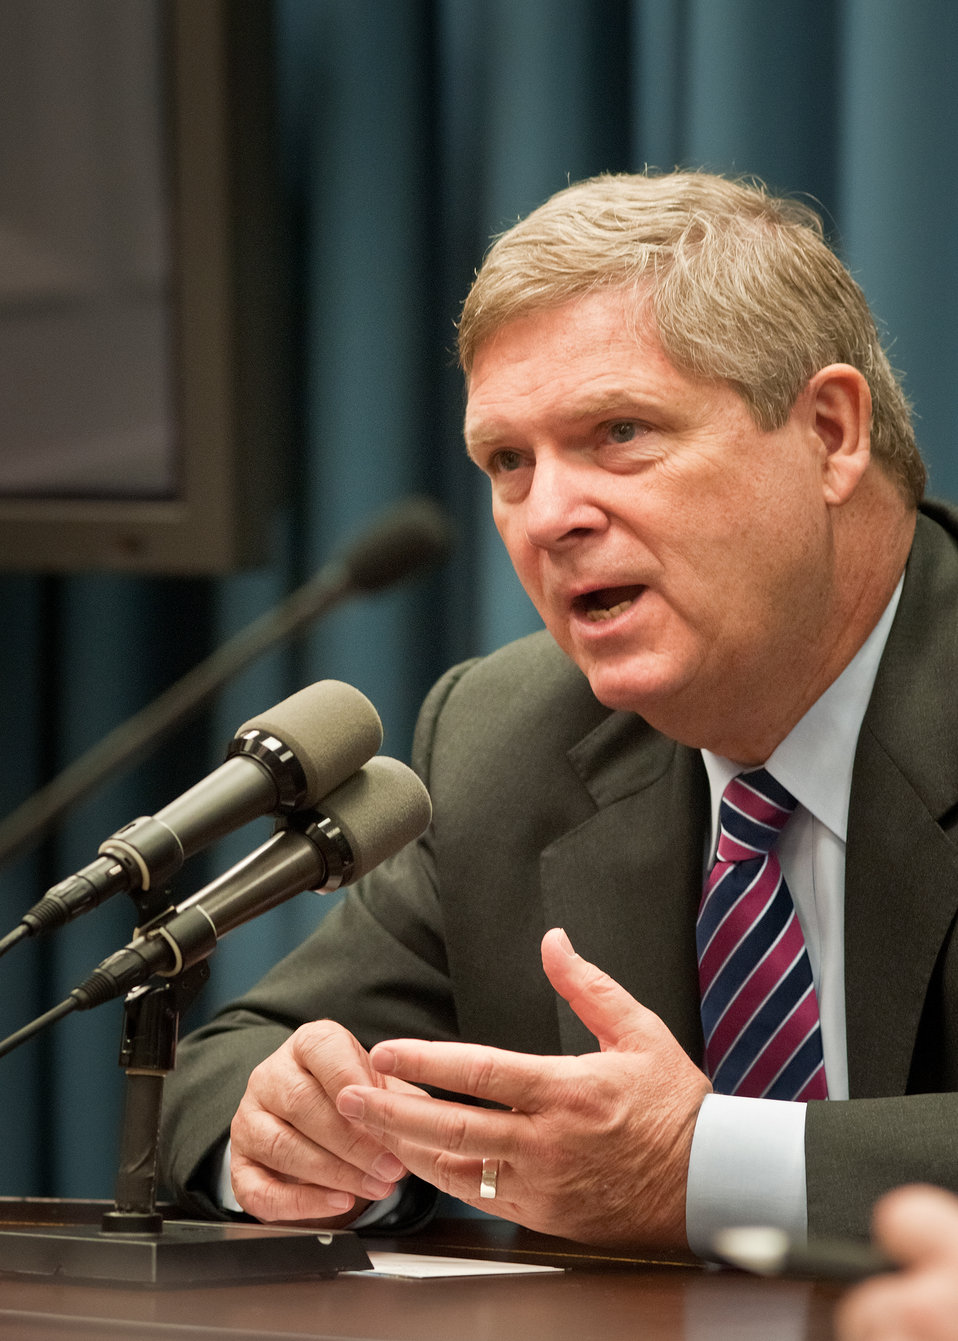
Agriculture Secretary Tom Vilsack discusses agriculture issues with members of the National Association of Farm Broadcasters during a session at the United States Department of Agriculture during the annual National Association of Farm Broadcasters visit to Washington, DC, on Tuesday, May 5, 2011.